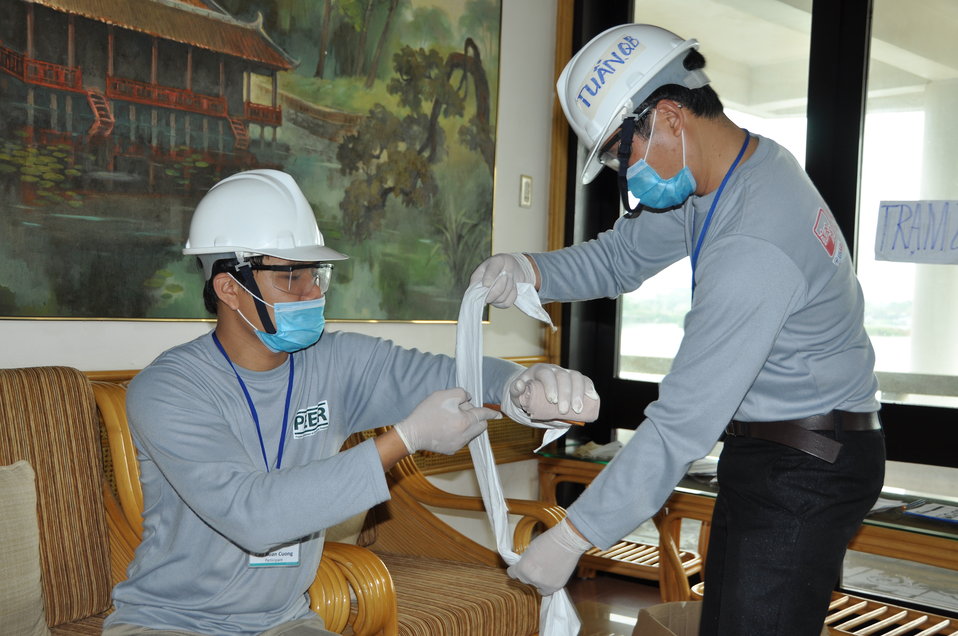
Disaster and Emergency Training Funded by USAID in Hue, Vietnam